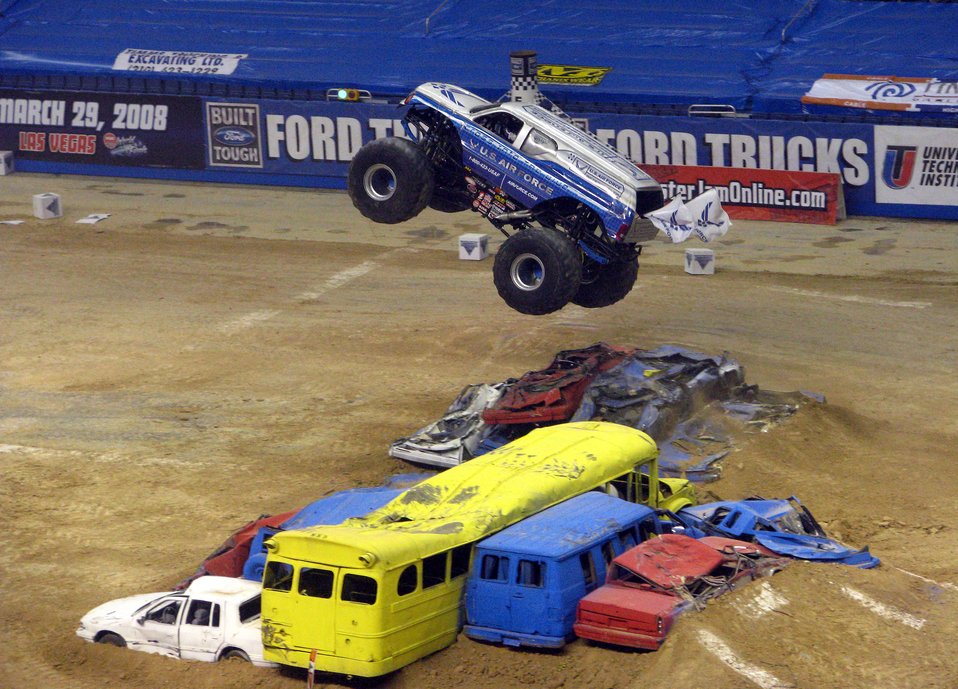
Afterburner steals the show

Afterburner, the Air Force's monster truck, dazzles the crowd Jan. 13 during the freestyle show at the 2008 San Antonio Monster Jam. Afterburner, an Air Force recruiting tool, is driven by Damon Bradshaw.